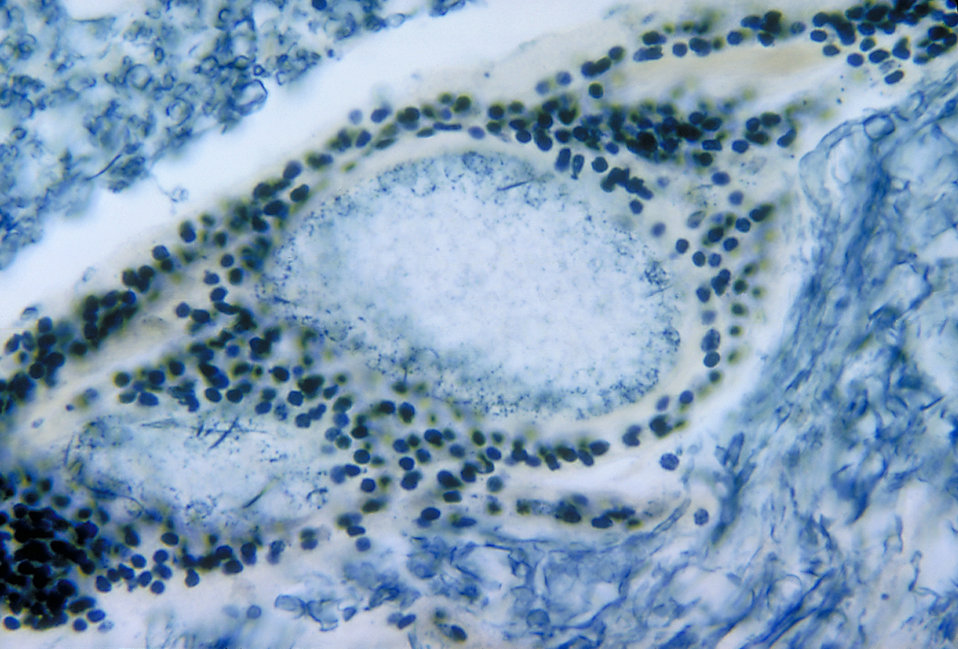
A photomicrograph of the lumbar cord revealing histopathology indicating previous demyelination and inflammation.